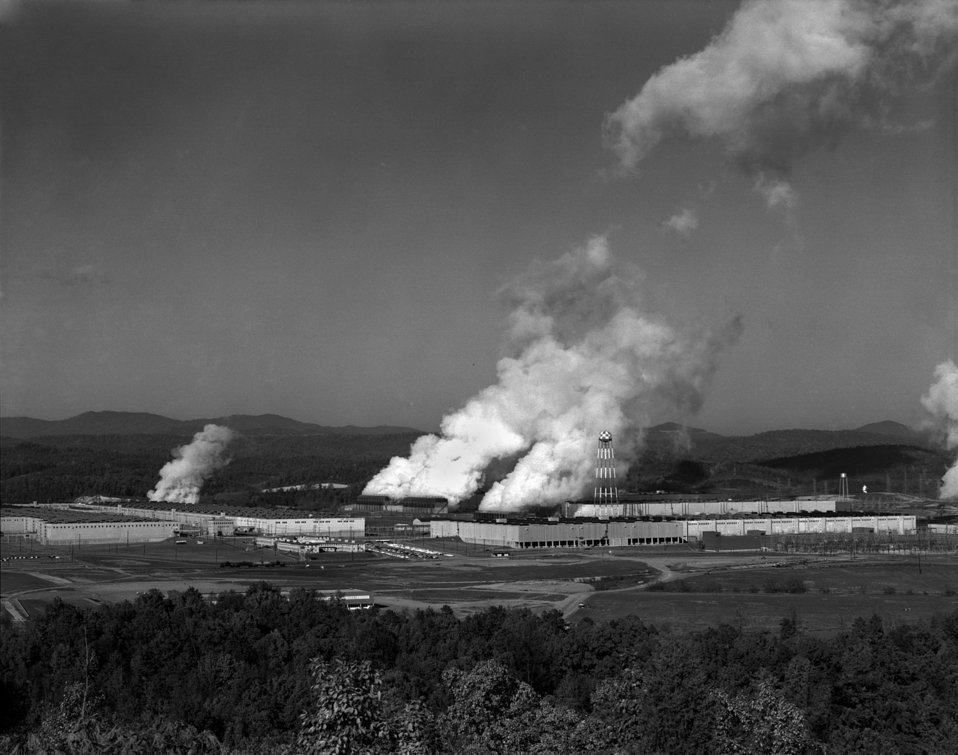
K-25 Plant With Steam Oak Ridge

60-1058 DOE photo by Ed Westcott

K-25 general view of plant facilities from patrol radio relay tower Oak Ridge Tennessee 11/7/1960